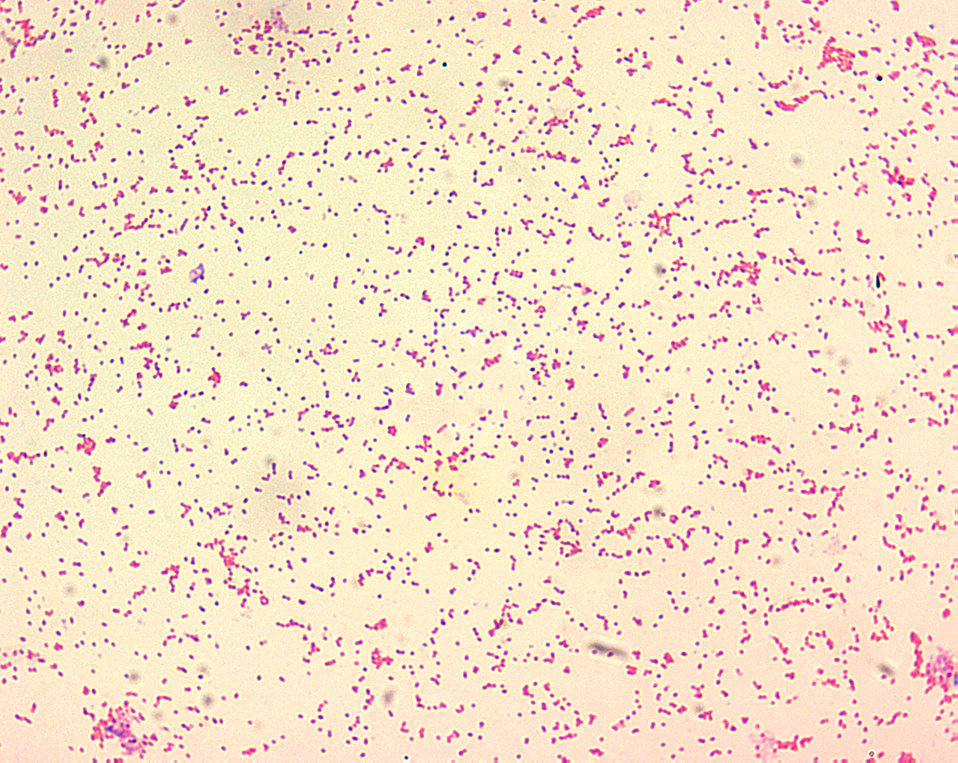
Brucella spp. are gram-negative in their staining morphology.